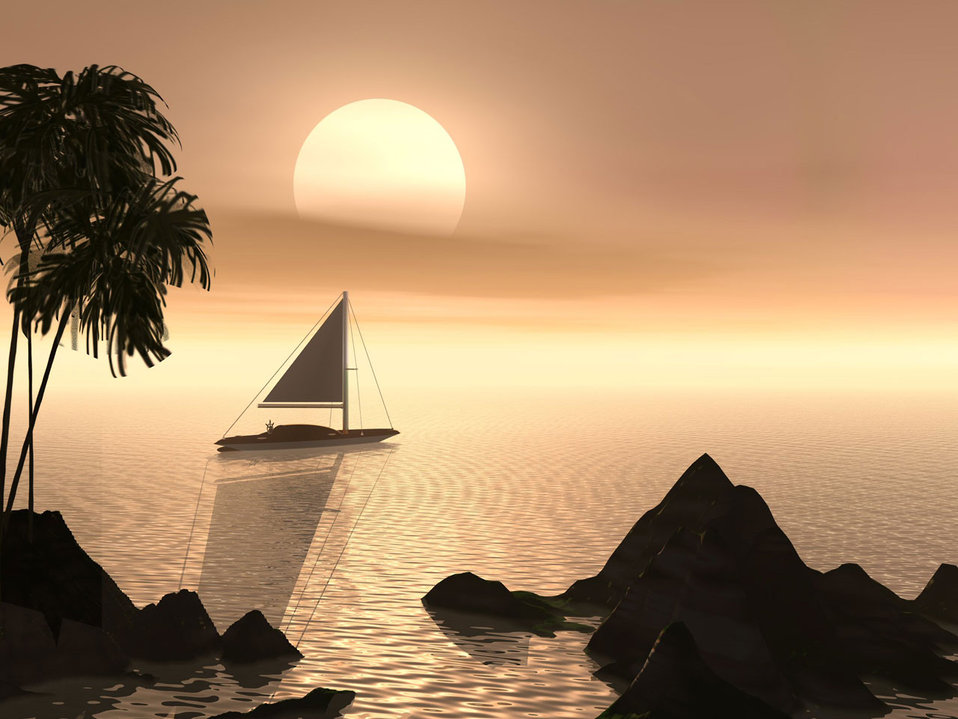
Safe passage

A serene image of a sailboat on the water.